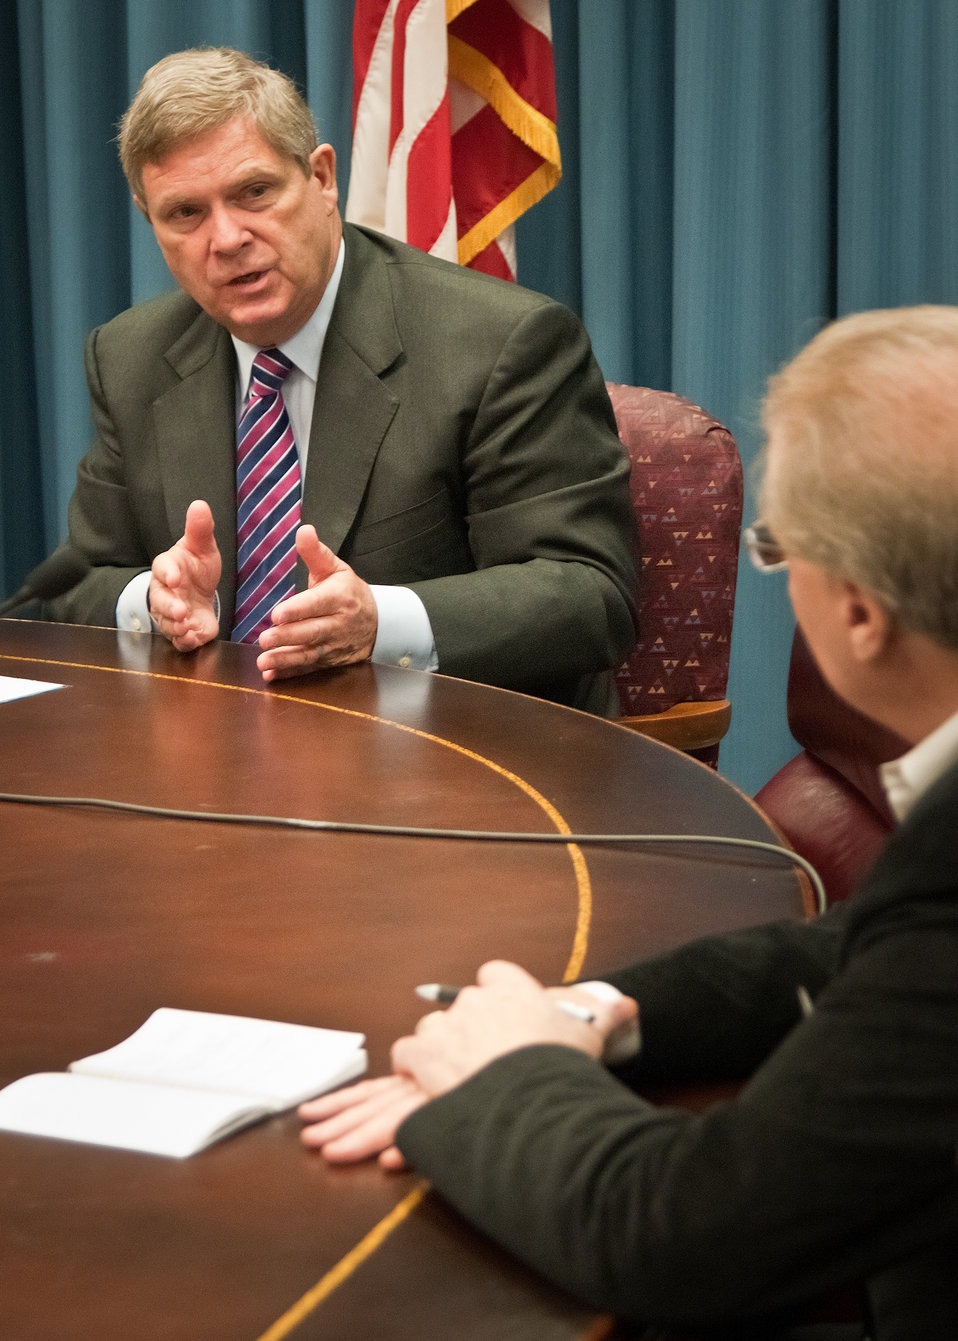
Agriculture Secretary Tom Vilsack answers a question posed by Mark Oppold, News Director, RFD TV, Omaha, Nebraska a member of the National Association of Farm Broadcasters at the United States Department of Agriculture in Washington, DC, Tuesday, May 5, 2011. The NAFB has an annual pilgrimage to Washington, DC where members have an opportunity to discuss agriculture issues directly to the Secretary of Agriculture and members of his cabinet.